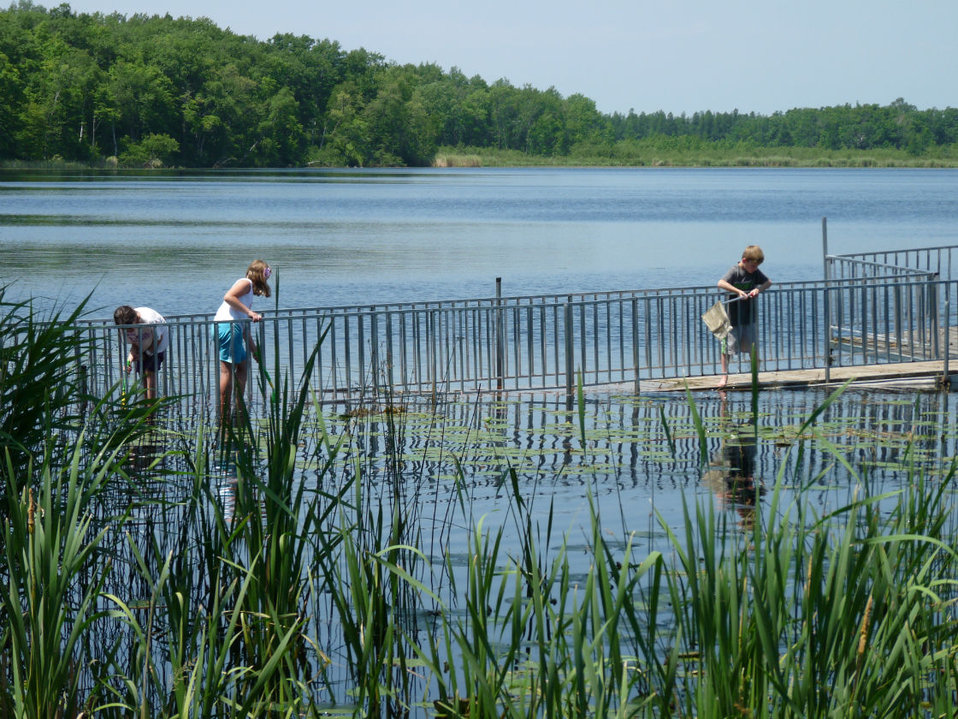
The flooded dock at Rice Creek NWR made for an adventure

Recent storms created water-logged adventures even on the dock at Mandy Lake.